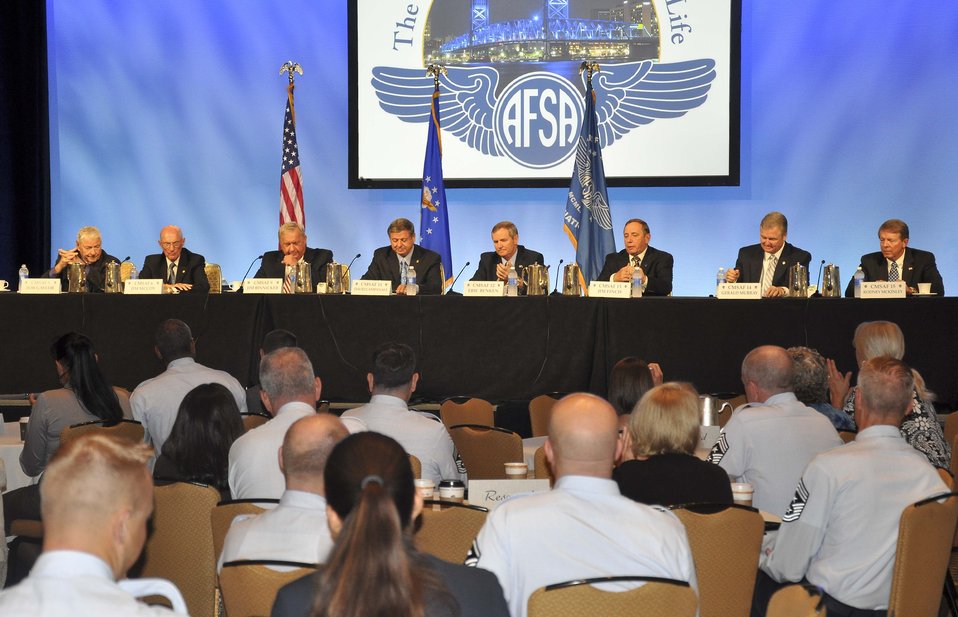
Former CMSAF forum

Former chief master sergeants of the Air Force answer questions during a forum at the Air Force Sergeants Association Convention and Professional Airmen's Conference in Jacksonville, Fla., Aug. 15, 2012. The former chiefs answered questions about their time as CMSAF and reflected on some of their memories as the Air Force’s top enlisted member.